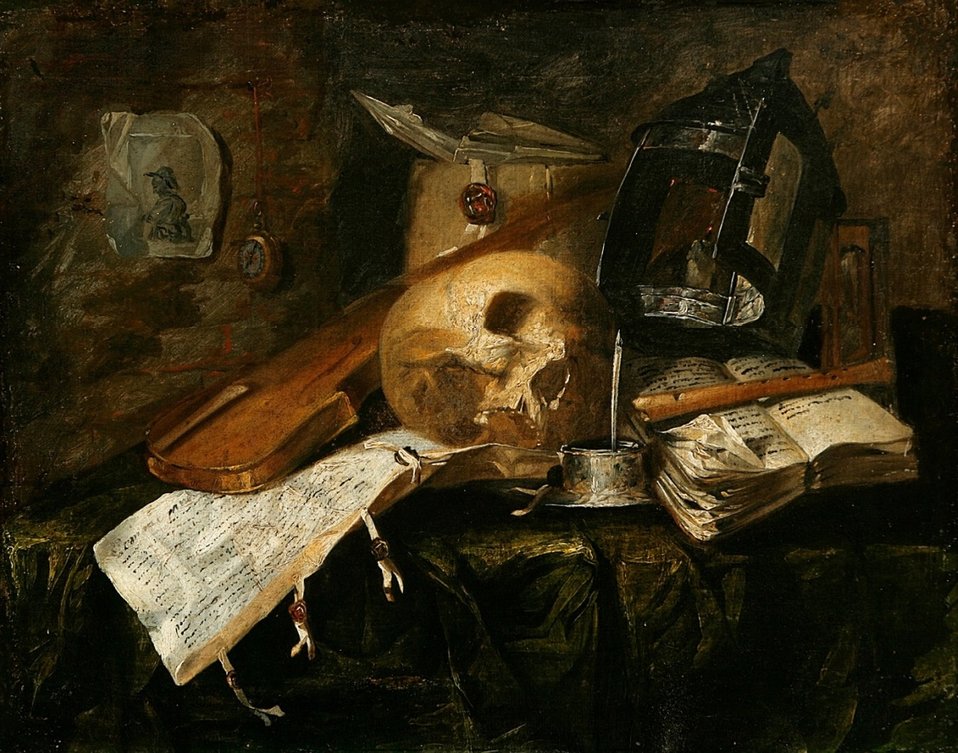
Peschier Vanitas